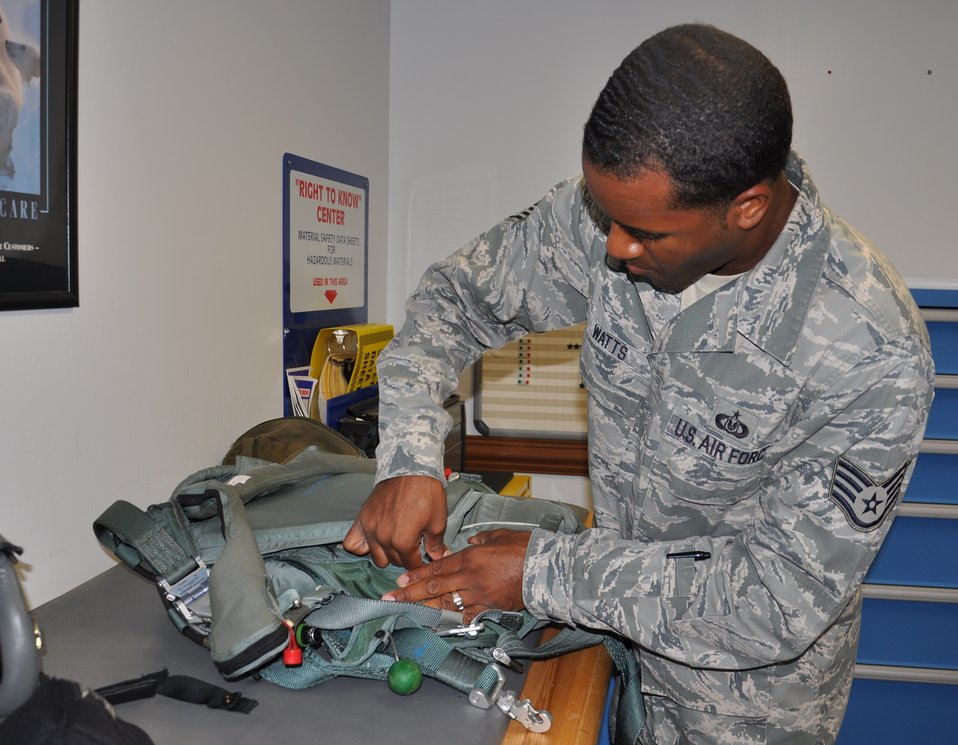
Rapping for Jesus

Staff Sgt. Christopher Watts inspects part of a pilot's g-suit. Watts is an aircrew flight equipment technician with the 325th Operations Support Squadron.